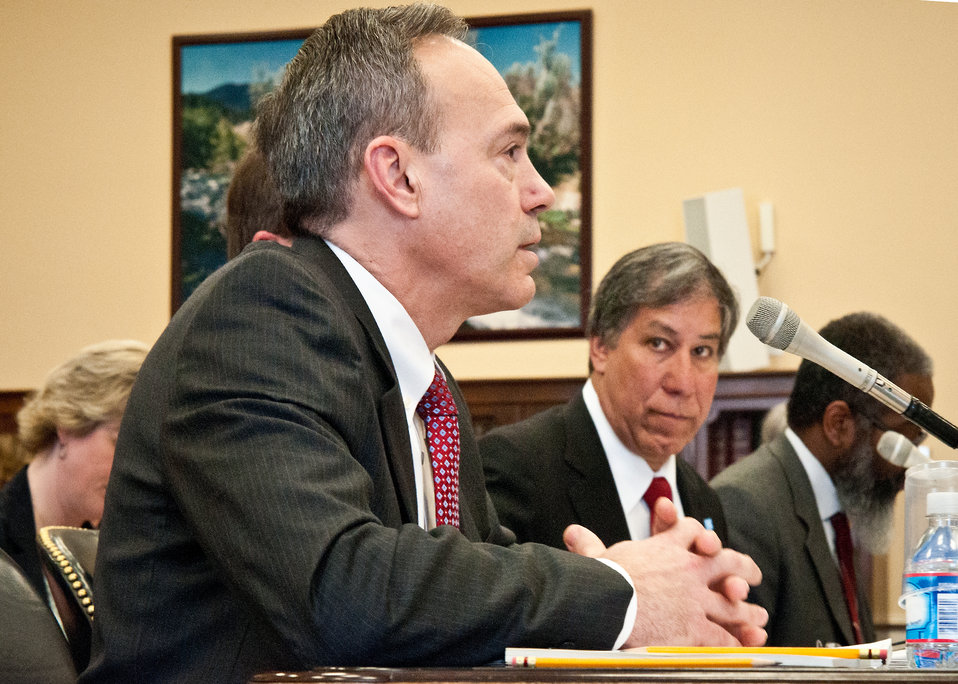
Alan Christian (left), Acting Administrator, Grain Inspection Packers Administration answers questions posed by members of the House Agriculture Appropriations Subcommittee while testifying on Capitol Hill with Ed Avalos (right), Under Secretary, Marketing and Regulatory Programs and representatives of the Marketing and Regulatory Program agencies on their fiscal year 2013 budget requests in Washington, D.C., Tuesday, March 6, 2012.